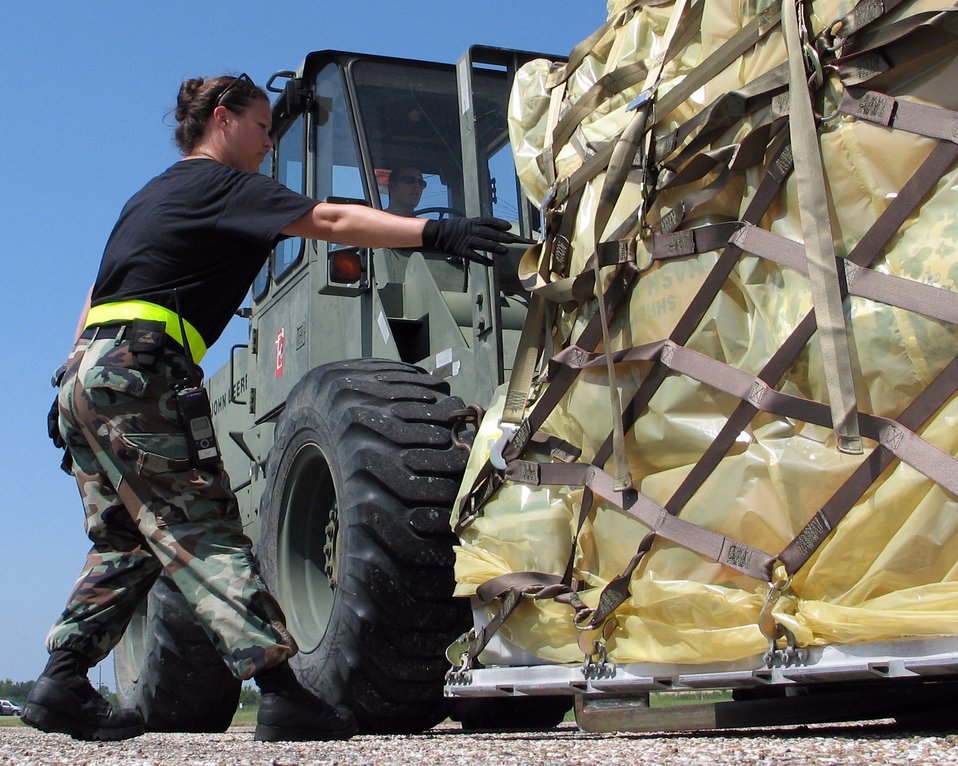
Hurricane Rita Humanitarian Assistance

ELLINGTON FIELD, Texas -- Staff Sgt. Colleen Jenkins (left) guides Senior Airman Ryne Chaney as he maneuvers a pallet of relief into place here for use in the Hurricane Rita relief effort. The supplies, moved Sept. 26, were donated by the Missouri Air National Guard. The Airmen are assigned to the 136th Aerial Port Squadron at Naval Air Station-Joint Reserve Base Fort Worth, Texas.